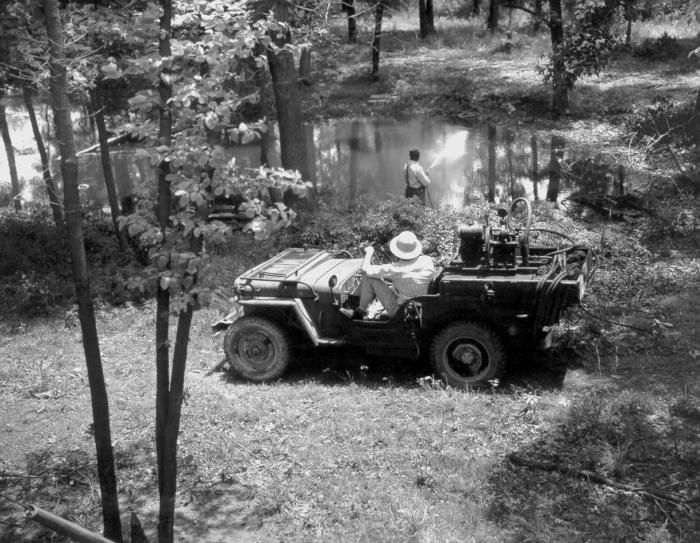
This individual was spraying oil atop a pond, which is a method of mosquito control in areas of standing water.